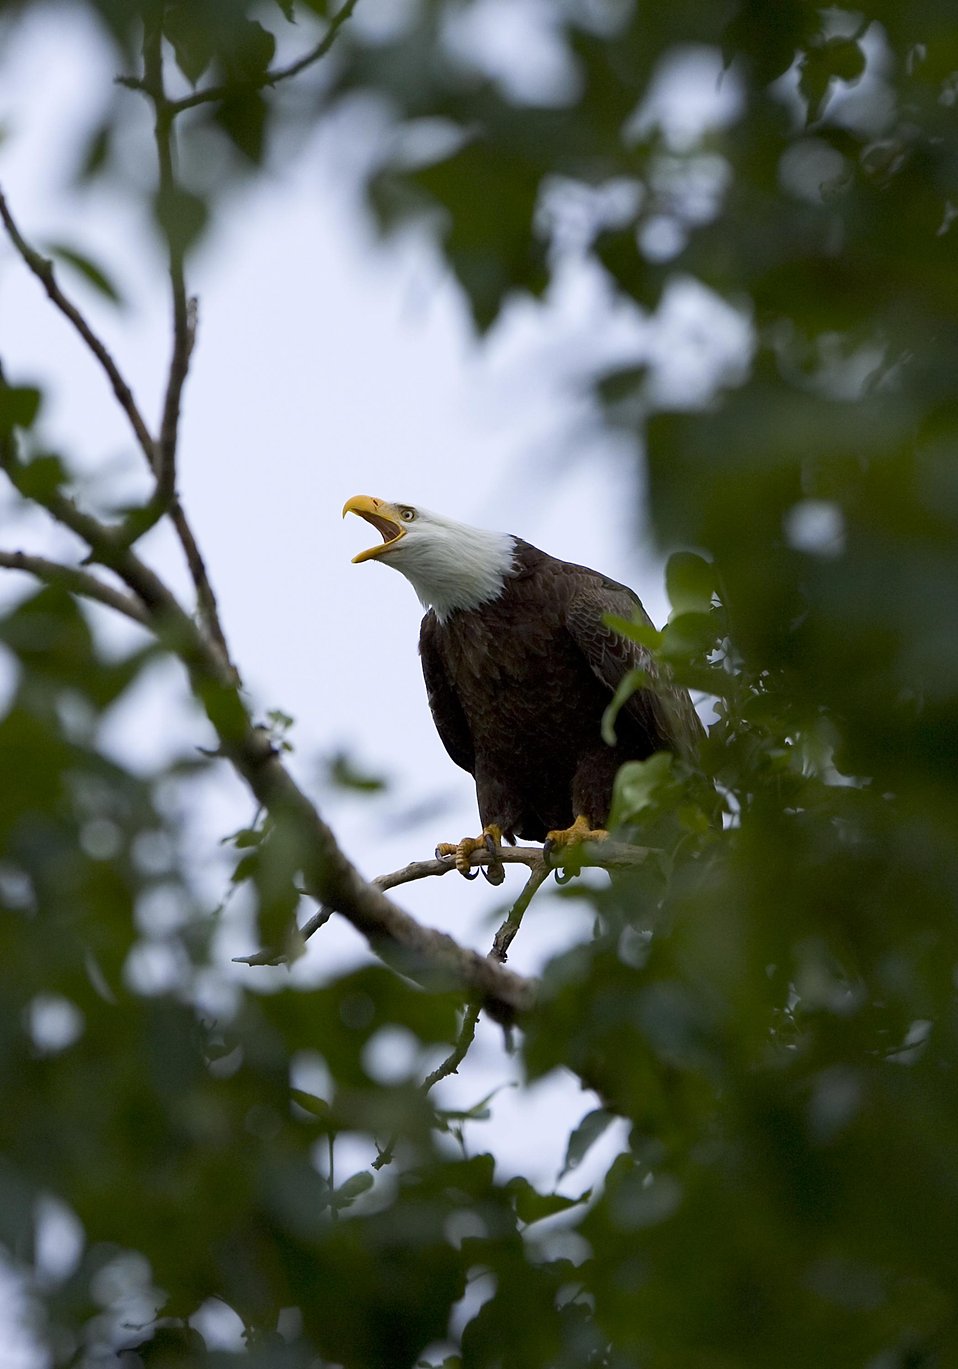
KOD Hildebrand (6)

Kodiak National Wildlife Refuge- Wildlife